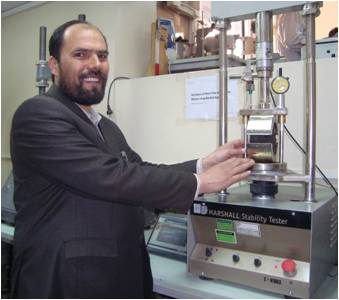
Engineering a Better Future

Capacity building is a powerful tool for change. USAID is helping Afghans gain the skills to develop their country and pass on their expertise to the next generation of leaders. Engineer M. Eshaq’s experience shows that knowledge, determination and vision can rebuild Afghanistan
Almost 30 years ago when Eshaq was in first grade, warring factions destroyed his school. Over the next five years, his parents and community members educated him to the best of their ability. By the time his family fled to Pakistan, he had learned enough to go into seventh grade. After he returned to Afghanistan, he finished high school in tents.
Eshaq successfully competed with 5,000 university applicants for one of 300 seats. However, several months into the program, he realized that he needed instruction that is more advanced. He gave up his seat to transfer to another university that had better science labs and taught courses in English. In four years, he graduated with an engineering degree.
Eshaq’s first engineering job was to help build a small clinic. That job led to building village roads. He soon began to work on major highway projects all over the country. He relished each challenge as an opportunity to grow.
A supervisor noticed that Eshaq was both meticulous in his work and a good teacher. He recommended him to the Kabul Central Laboratory operated by USAID’s Afghanistan Infrastructure Rehabilitation Program. As a senior lab manager there, Eshaq conducted an array of quality control tests on road materials and taught more than 100 university interns.
After seven years, Eng. Eshaq decided to set out on his own. “I understood that now is the time Afghans can start a business,” he explained. “We see the capability in ourselves. Before, we were not able to fulfill the requirements. Now, we can.” Prepared with the technical and managerial skills to be successful, he bought equipment, hired employees, and began to answer requests for proposals.
After winning his first contract, he decided to share his skills with the next generation of Afghan professionals. He recruited university interns to work and learn in his lab. Three of them have graduated and found jobs. Proud of the impact he has had on the students’ skills and employment eligibility, Eshaq has already filed papers to bring in a new group of interns.